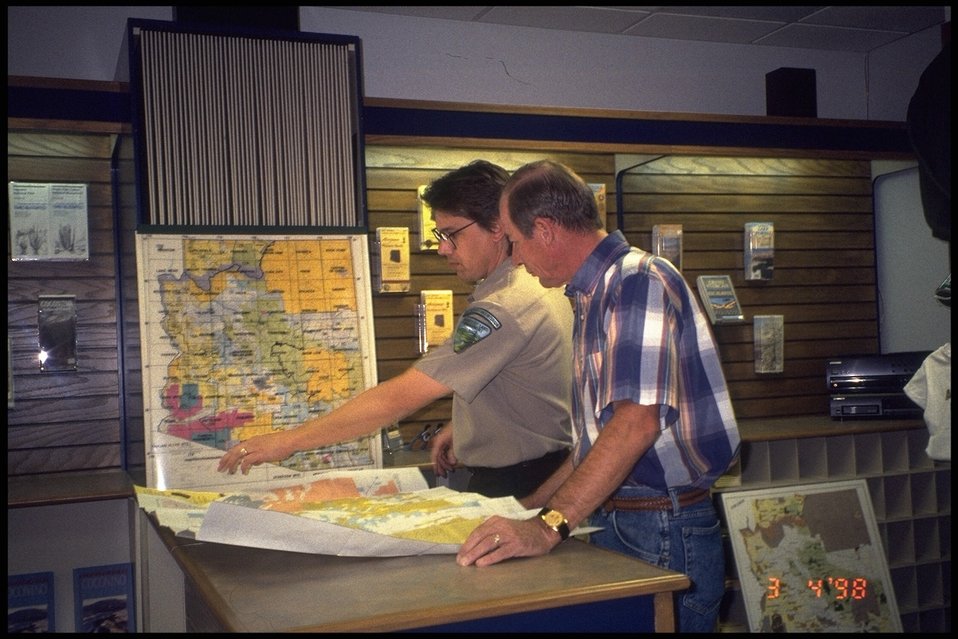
Ed Perault, helps customers locate the best fishing holes in Arizona. The Arizona Public Lands Information Center (PLIC) is a partnership between the nonprofit Public Lands Interpretive Association and the Bureau of Land Management. The Center offers one-stop-shopping and up to date information on all of the public lands in Arizona.